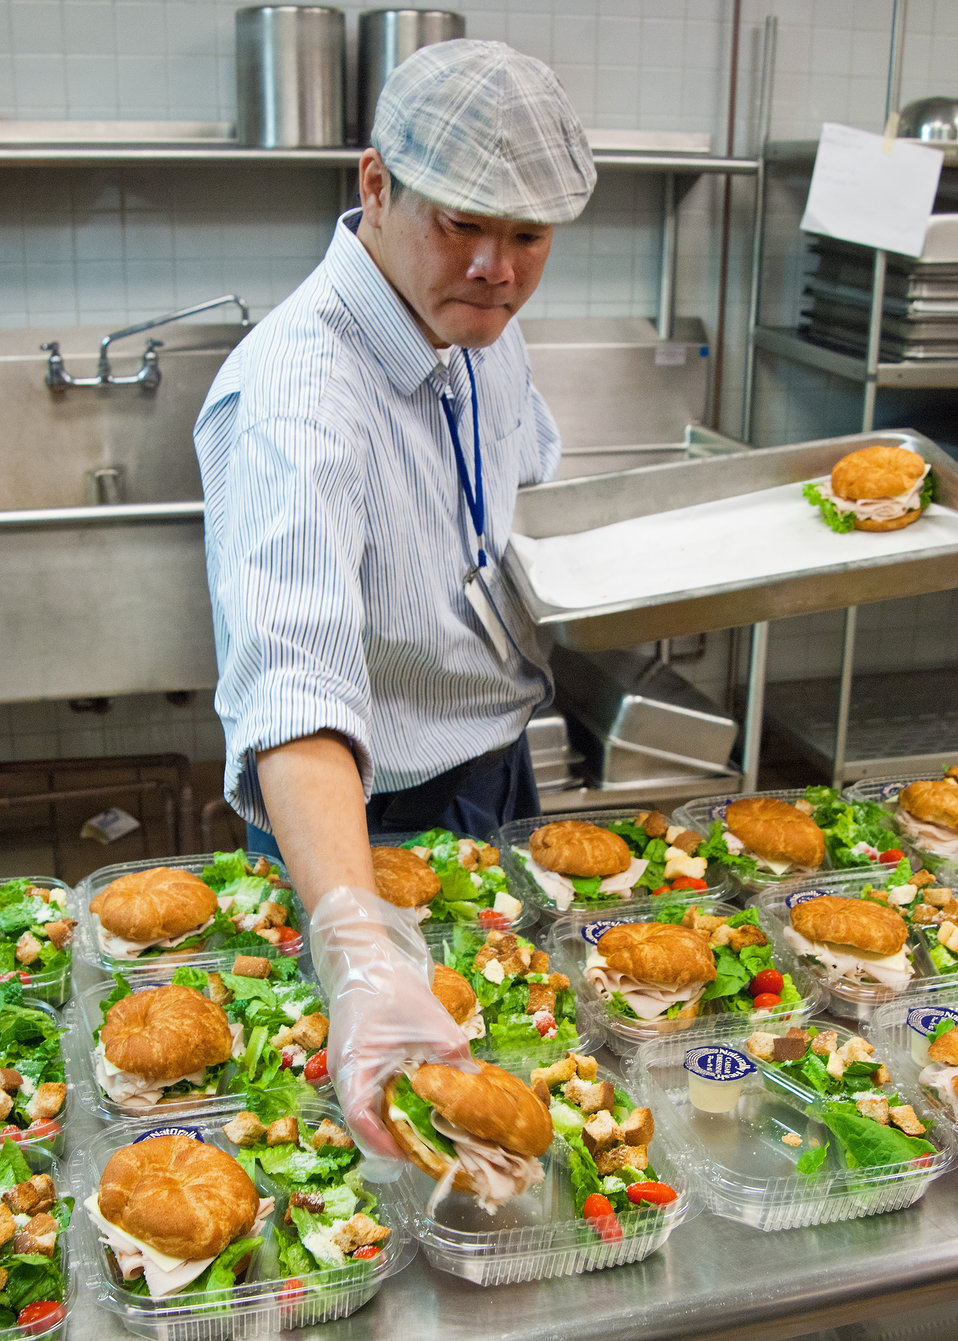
Thai Nguyen, a Food Service Specialist with Arlington Public Schools Food and Nutrition Service places turkey and cheese croissants in salads he prepared for the National School Lunch Program in the kitchen at Washington-Lee High School in Arlington, Virginia, on Wednesday, October 19, 2011. The National School Lunch Program is a federally assisted meal program administered by the United States Department of Agriculture, Food and Nutrition Service operating in public, nonprofit private schools and residential child care institutions. It provides nutritionally balanced, low-cost or free lunches to children each school day.